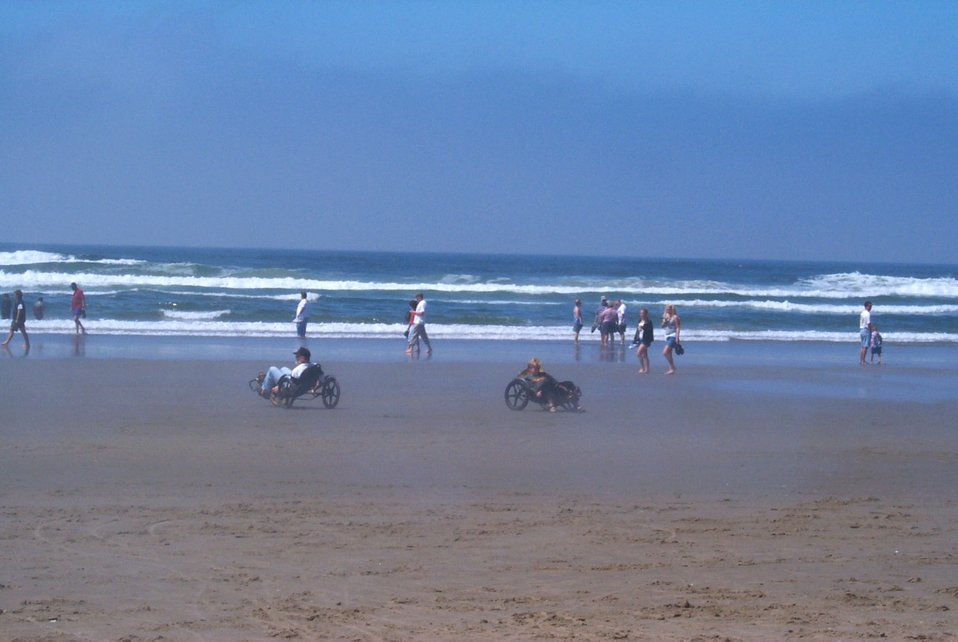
Riding rented trikes on the beach at Cannon Beach.